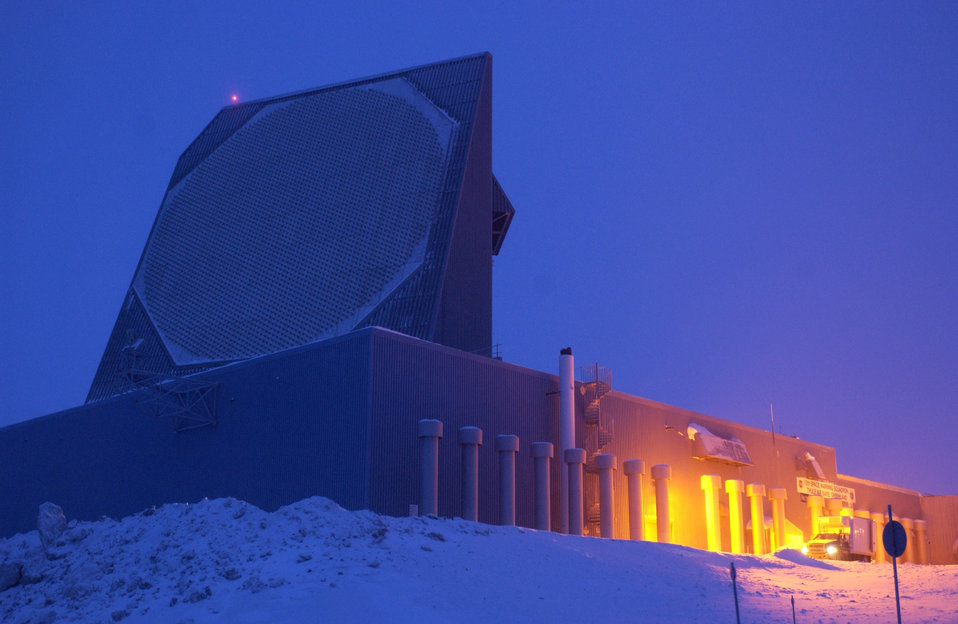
Life at Thule

One of the two radar faces of the Ballistic Missile Early Warning System, or BMEWS, site is captured using time-lapsed photography to show the minimal amount of available light during twilight Jan. 25 at Thule Air Base, Greenland.